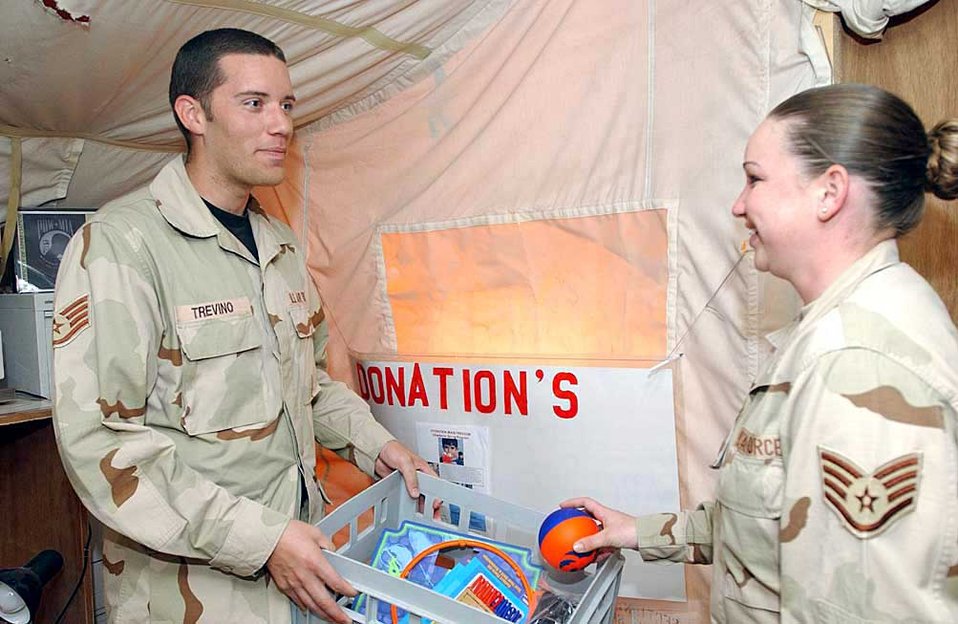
Assisting the chaplain

SOUTHWEST ASIA -- Staff Sgt. Benjamin Trevino, a chaplain assistant, collects a donation for children in Iraq and Afghanistan from Staff Sgt. Jessica Jones. Chaplain assistants take care of office functions and the logistical needs of the chapel so chaplains can concentrate on people in a deployed environment. Both sergeants are assigned to the 379th Air Expeditionary Wing.